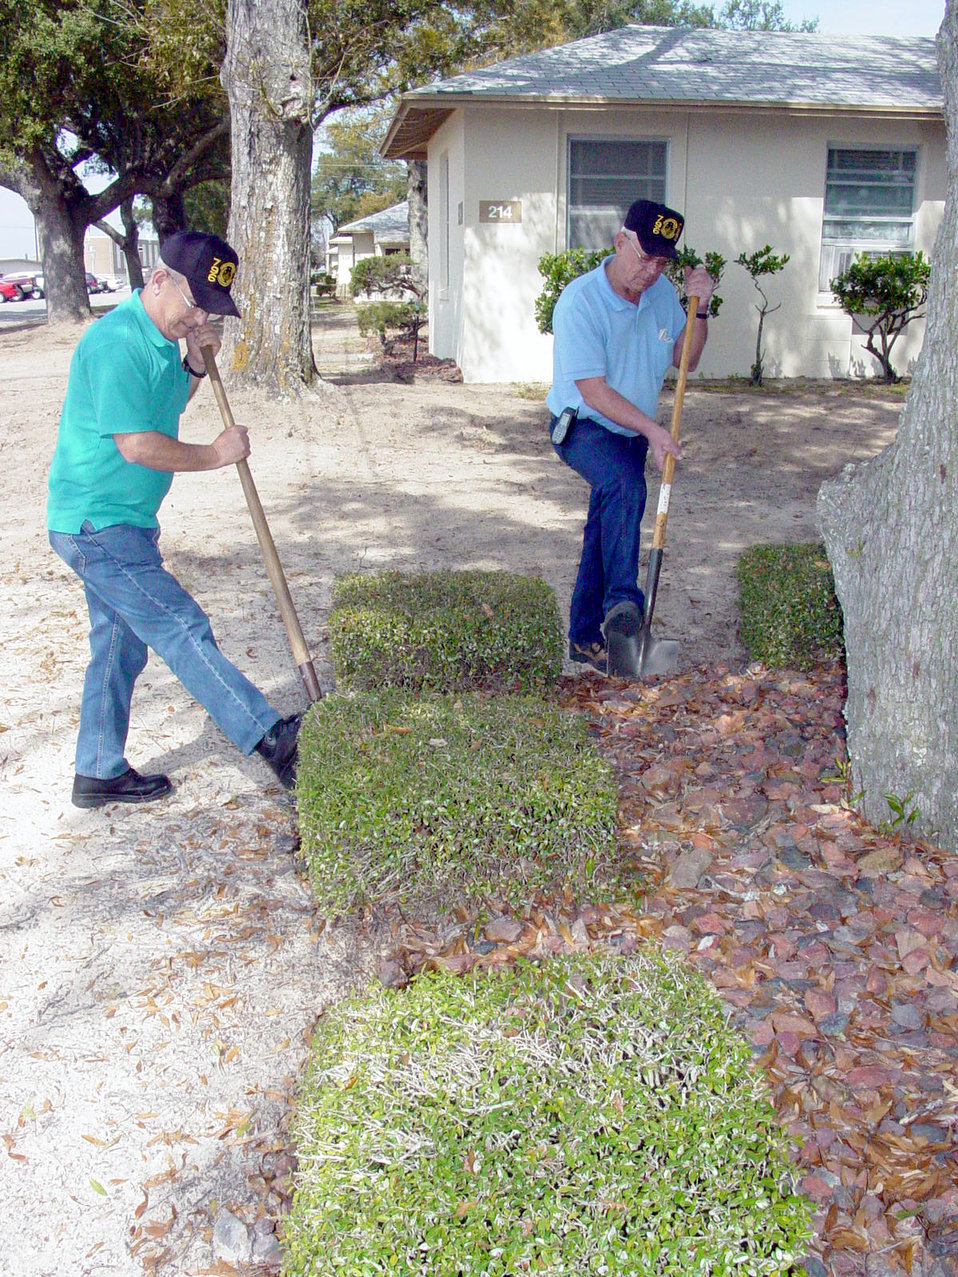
Clearing the way

EGLIN AIR FORCE BASE, Fla. -- Peter McMullen and Sam Morgan clear a planter and bushes from the base of a tree here. Surfacing roots are a warning sign of tree stress and suffocation. The men are both 796th Civil Engineer Squadron grounds supervisors.